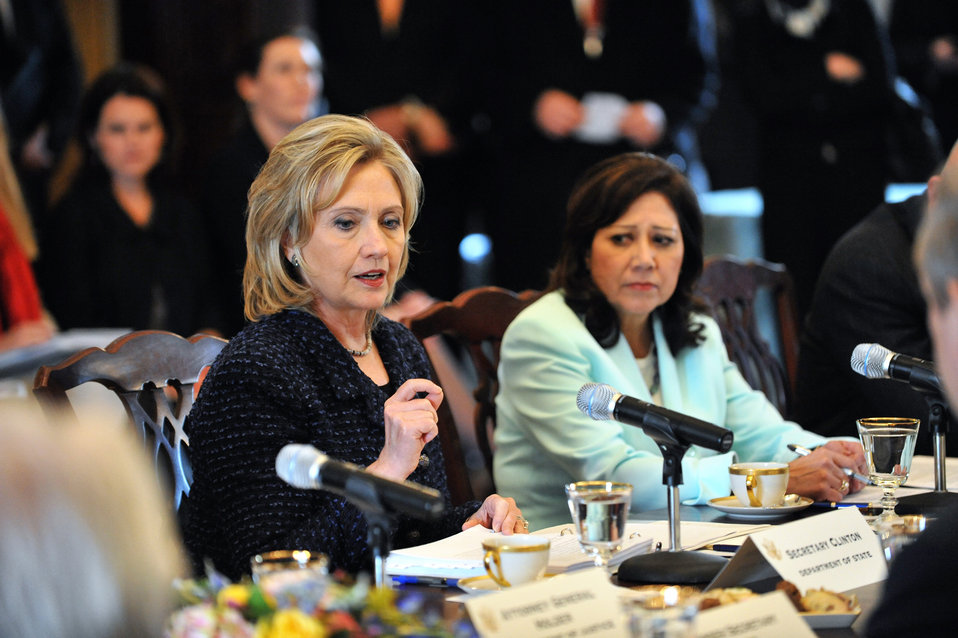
Secretaries Clinton and Solis Participate in the President's Interagency Task Force To Monitor and Combat Trafficking in Persons

U.S. Secretary of State Hillary Rodham Clinton, left, and U.S. Secretary of Labor Hilda L. Solis, right, participate in the annual meeting of the President's Interagency Task Force To Monitor and Combat Trafficking in Persons at the U.S. Department of State in Washington, D.C., on February 1, 2011.